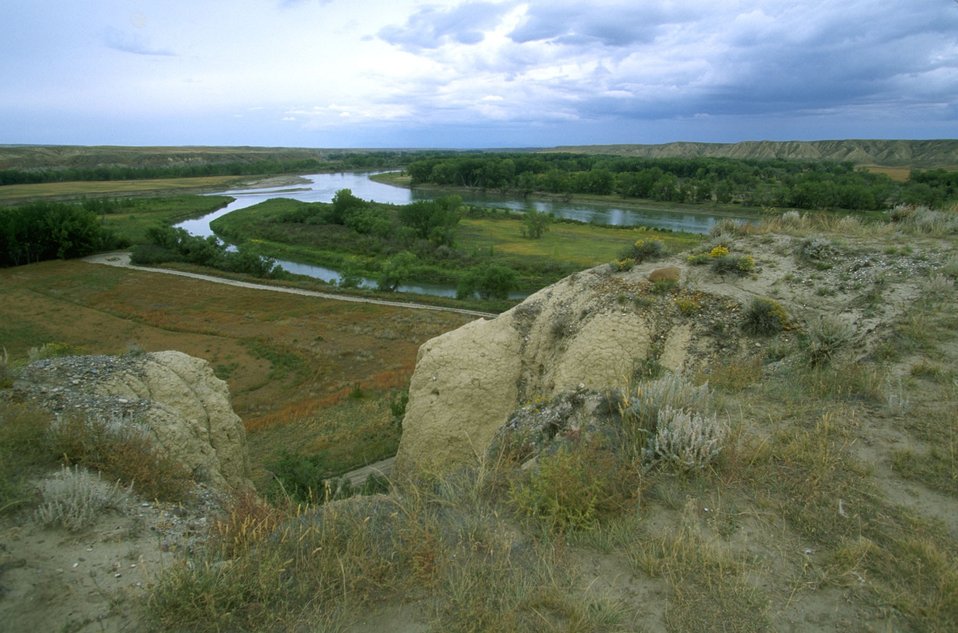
Richard Wood Watchable Wildlife Area